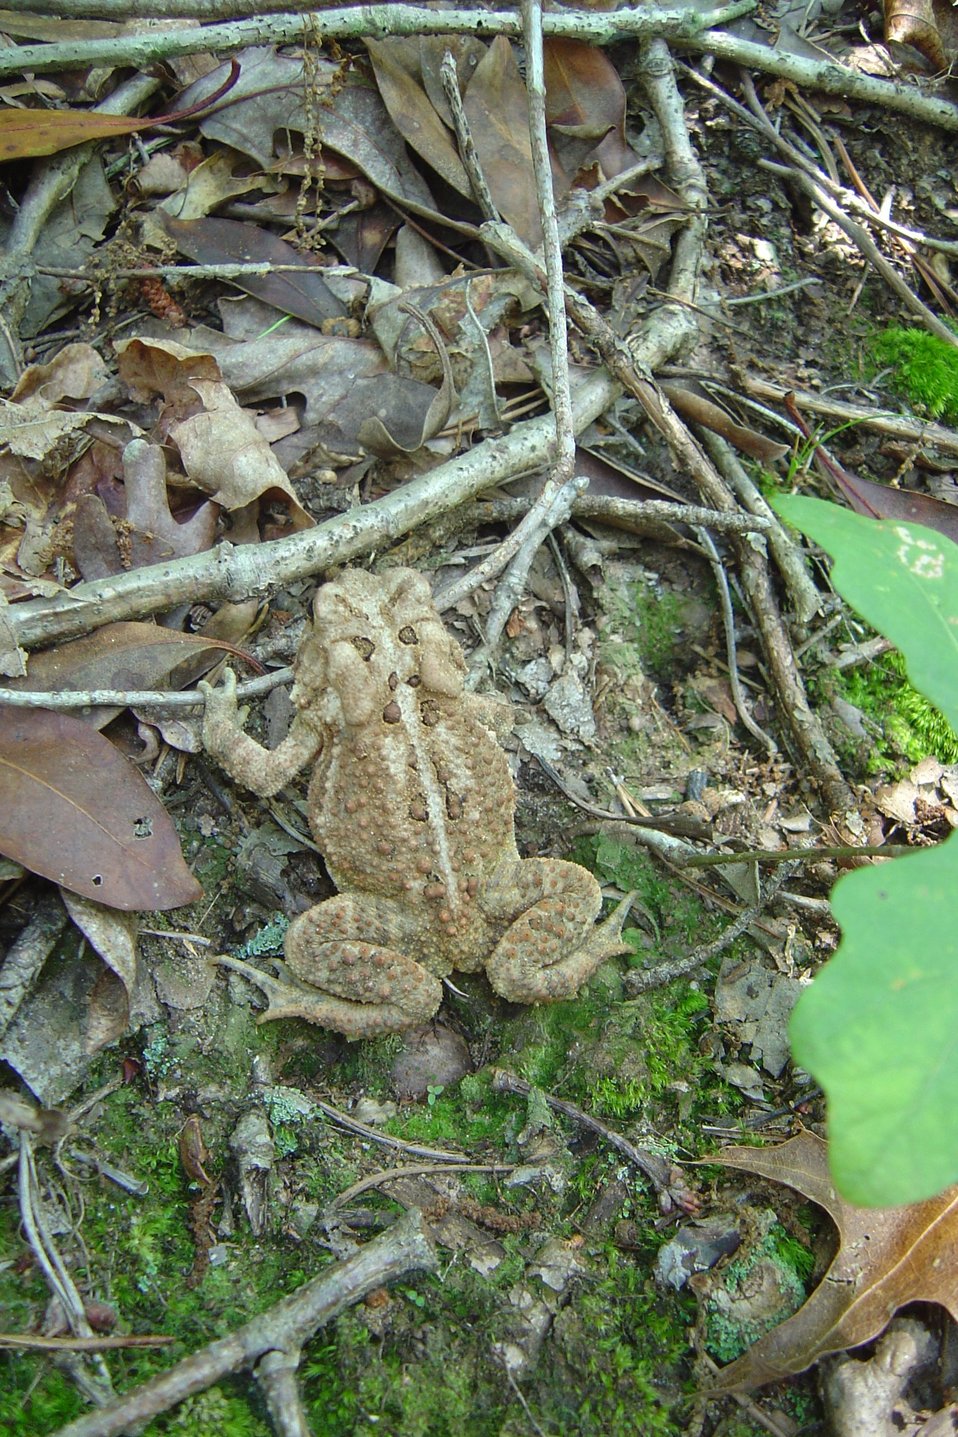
American toad

An American toad in the forest of the South River Greenway, Maryalnd